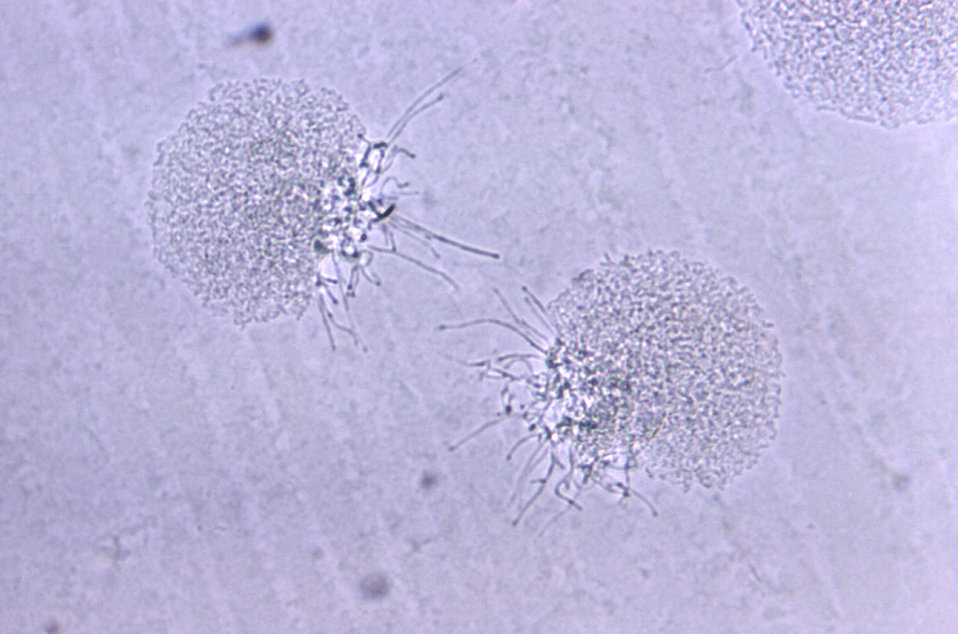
Cultivated for 48hrs on a medium of brain heart infusion (BHI) agar, under a magnification of 380X, this photomicrograph revealed some of the ultrastructural morphology displayed by Gram-positive Actinomyces sp. bacterial microcolonies.